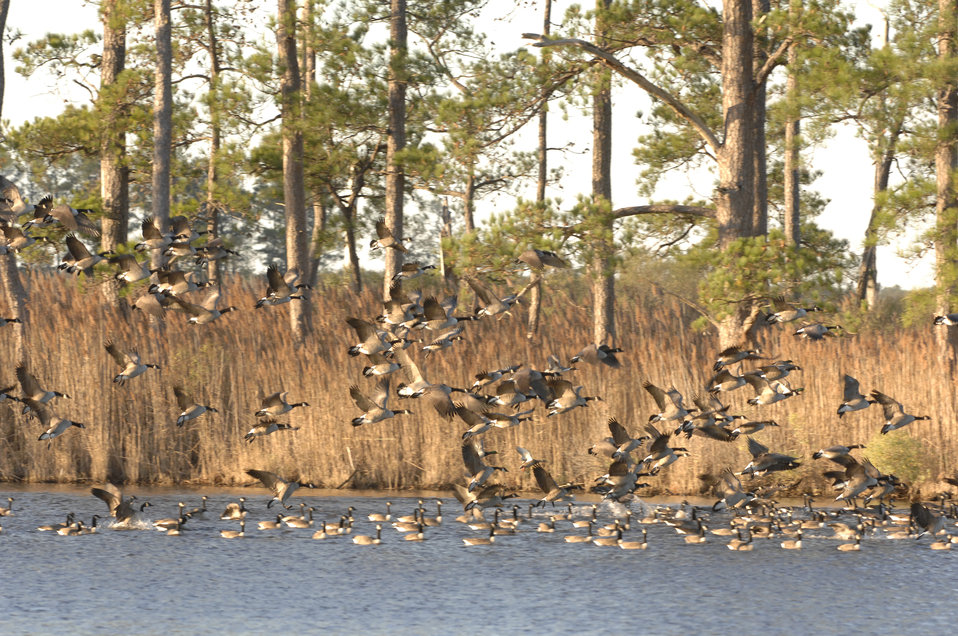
A flock of Canadian Geese takes flight on Blackwater Marsh at Blackwater National Wildlife refuge in Cambridge, MD., on March 9, 2006. The refuge is a waterfowl sanctuary for migrating birds along the critical migration highway called the Atlantic Flyway. Blackwater refuge has over 25,000 acres of freshwater impoundments, brackish tidal wetlands, open fields, and mixed evergreen and deciduous forests.